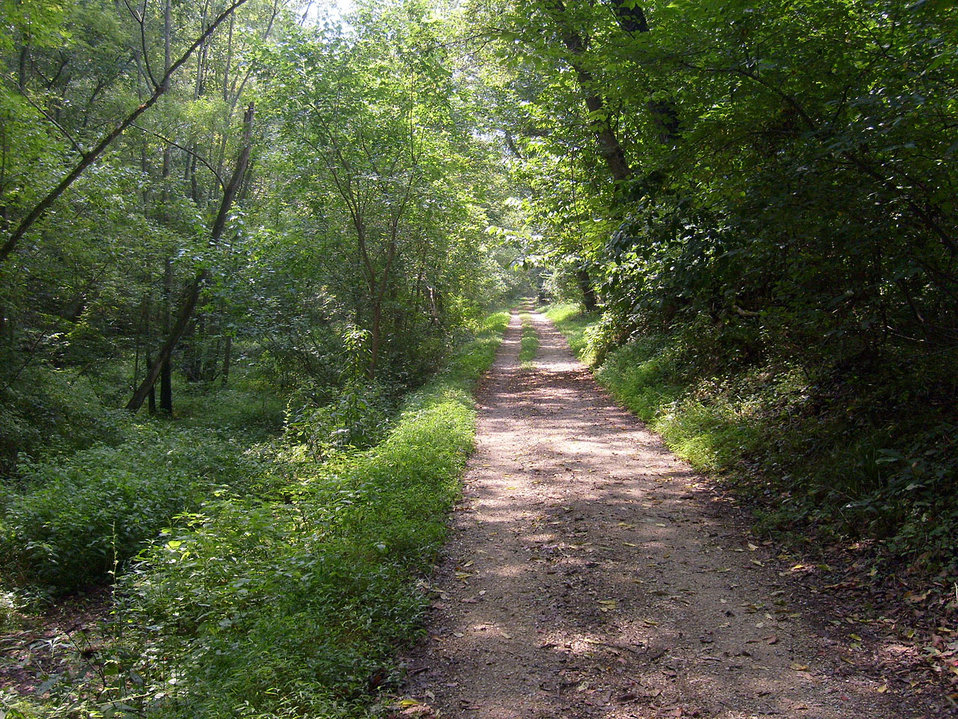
Tow path

C & o canal tow path.